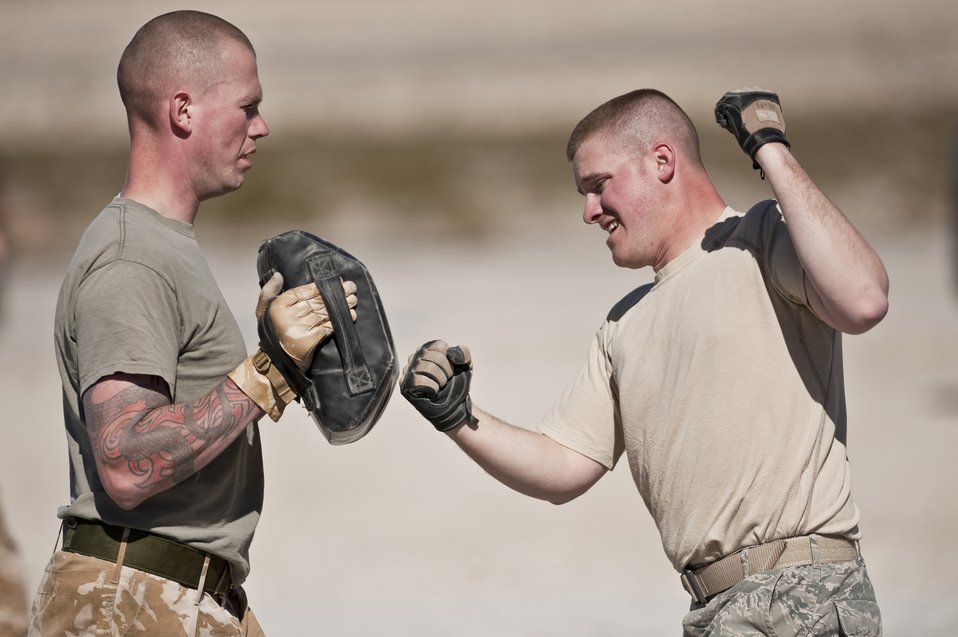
Packing a punch

Royal Air Force Senior Aircraftsman Neil Morgan holds a pad as Staff Sgt. Patrick Steele practices a hand-to-hand combat technique March 8, 2011, as part of Desert Eagle, a combined exercise at the Nevada Test and Training Range. Sergeant Steele is assigned to the 820th Base Defense Squadron.